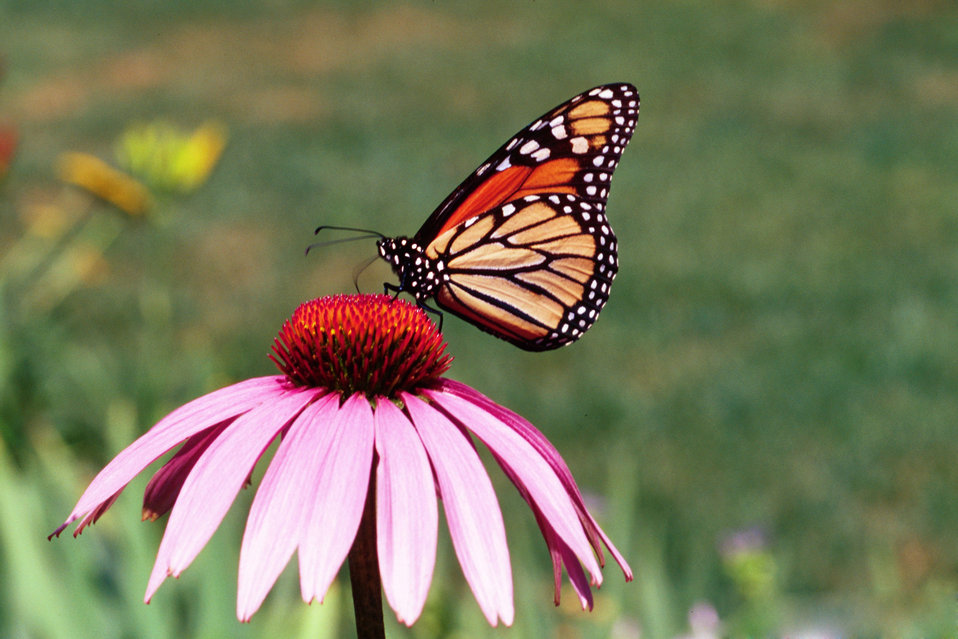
A monarch butterfly collects nectar from a flower. Butterflies are one of nature’s many pollinators for flowers and crops and are crucial in production for fruits and vegetables.